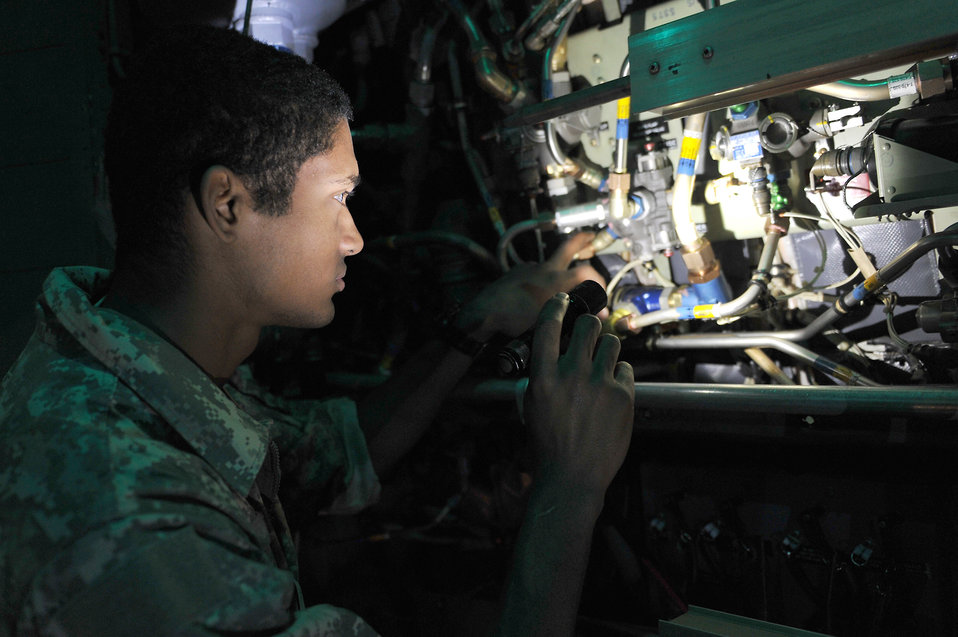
C-130 maintenance operations

Senior Airman Bruce Allen performs a preflight check on the cargo deck of a C-130 Hercules March 24, 2011, at Little Rock Air Force Base, Ark. Airman Allen is a crew chief assigned to the 19th Aircraft Maintenance Squadron.